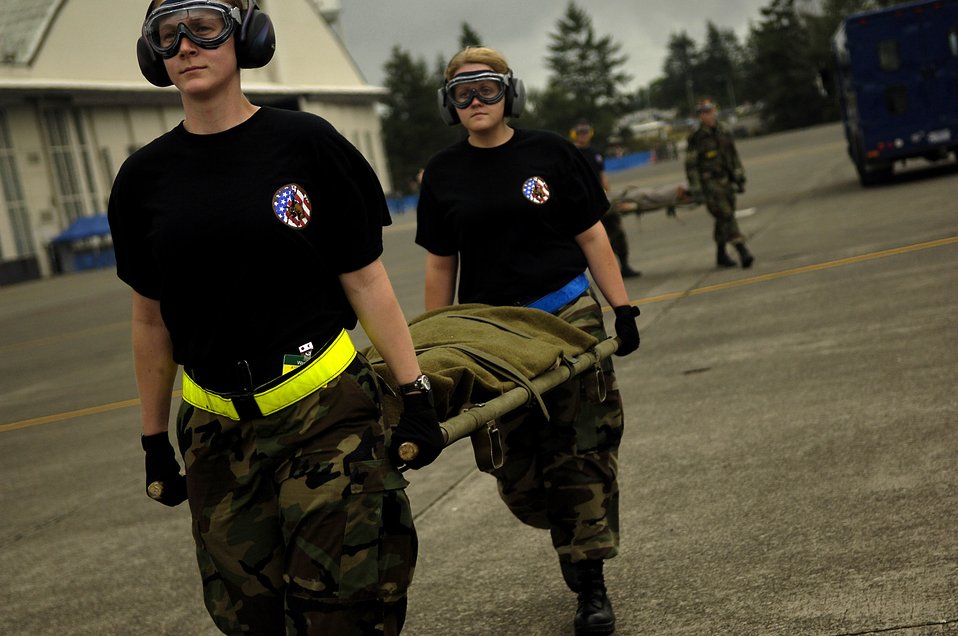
Aeromedical evacuation teams test life saving skills at Rodeo

Airmen carry mock patients on litters to waiting members of the 375th Aeromedical Evacuation Squadron from Scott Air Force Base, Ill., aboard a C-130 Hercules July 23 at McChord Air Force Base, Wash. The scenario was part of the aeromedical evacuation competition during Air Mobility Command's Rodeo 2007, a readiness competition of U.S. and international mobility air forces.